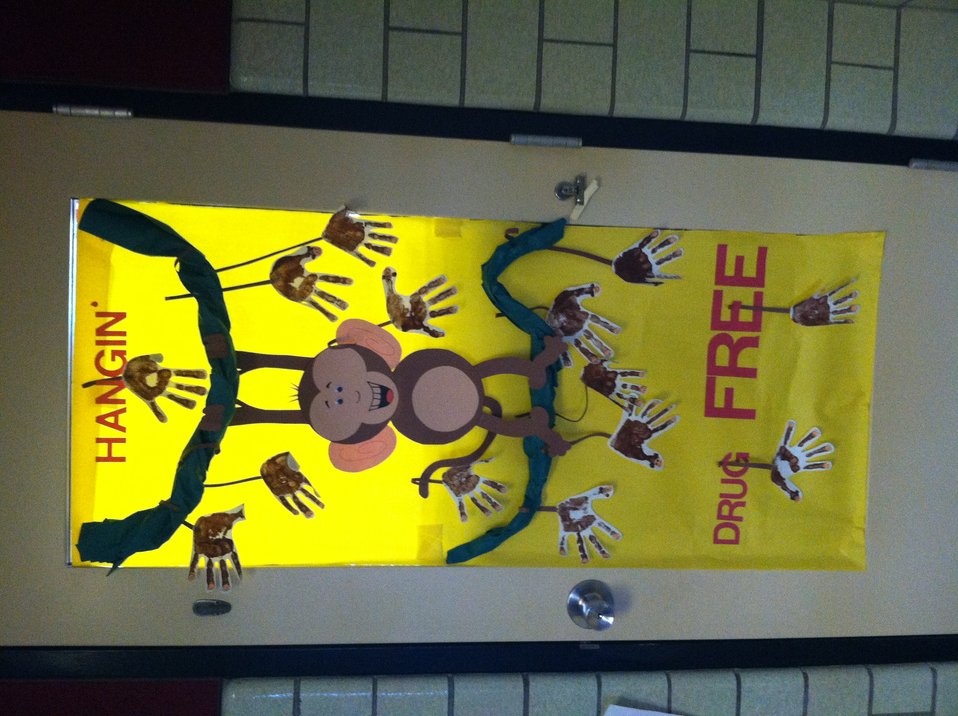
Poster Contest NDFW 2013

Alverton, Penn., Southmoreland Primary Center held a 'Jungle-themed' poster contest during its NDFW 2013 events.